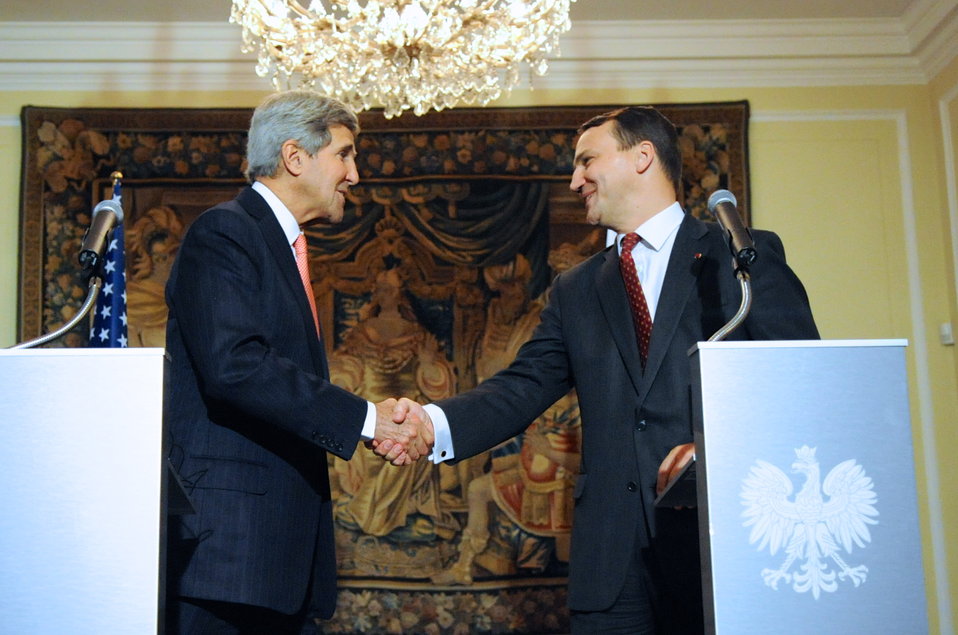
Secretary Kerry, Polish Foreign Minister Sikorski Shake Hands After News Conference

U.S. Secretary of State John Kerry shakes hands with Polish Foreign Minister Radoslaw Sikorski after they addressed reporters during a news conference that followed their meeting at Foksal Palace in Warsaw, Poland, on November 5, 2013.